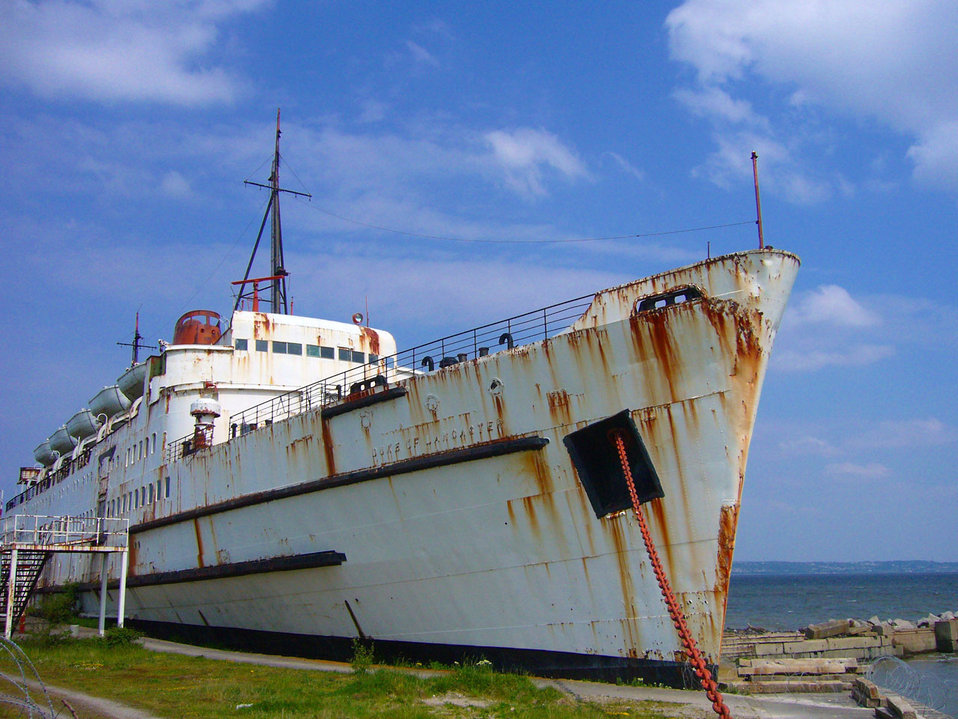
Old ship in harbor.